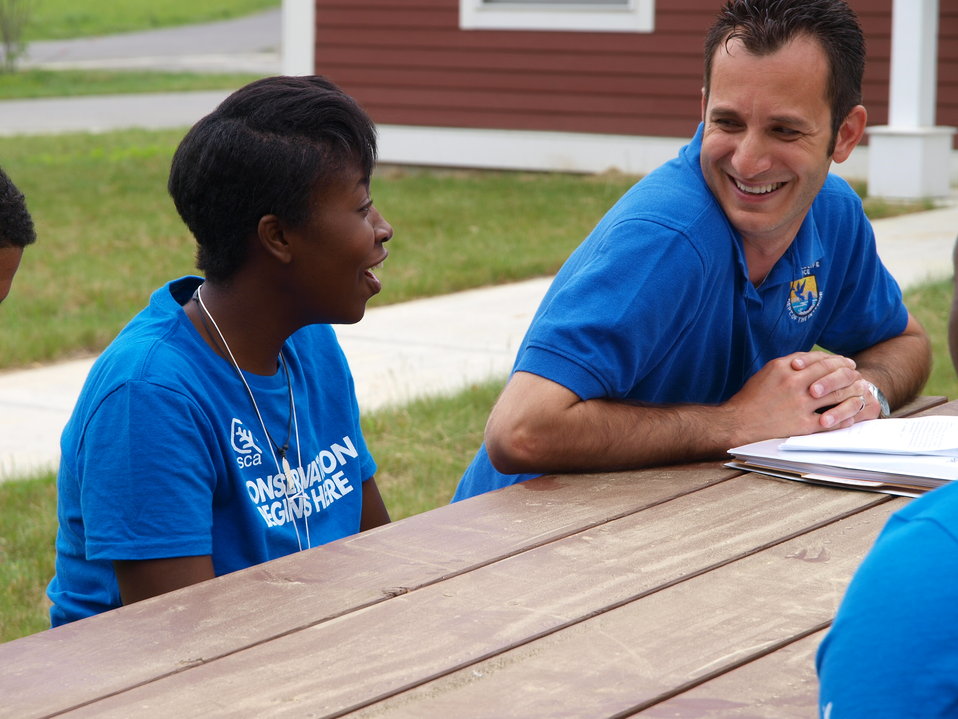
Mentors with their Mentees

Juancarlos and Hawanicole meet with their Mentor group.